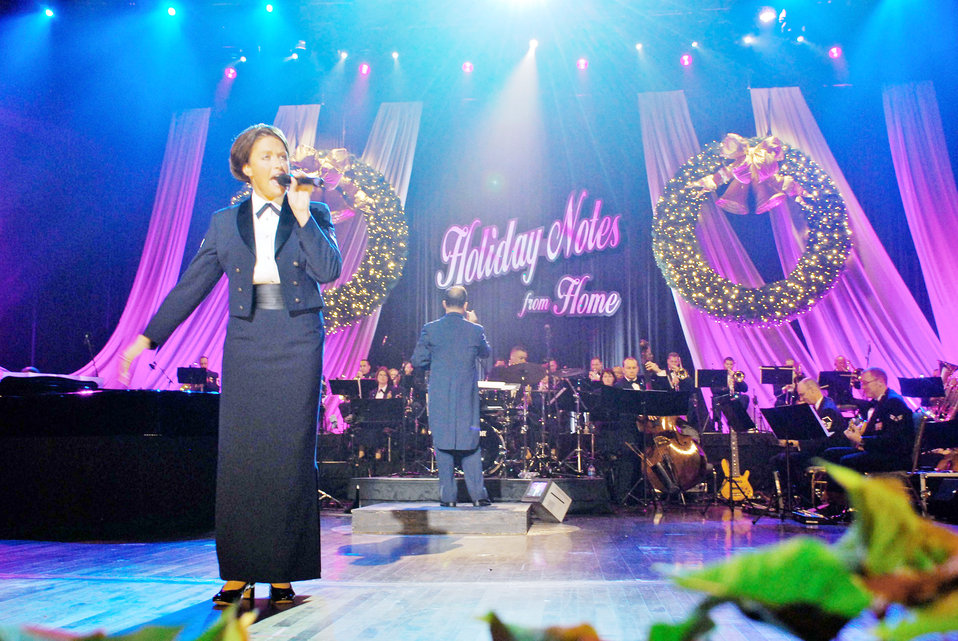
Holiday Notes from Home airs Dec. 23-25

Tech Sgt. Alyson Jones' lifetime dream to sing on the Grand Ole Opry's stage came true as she sang holiday favorites during this year's Holiday Notes from Home holiday concert in Nashville, Tenn. The annual concert was taped Oct. 26, 2009, and will broadcast on Gospel Music Channel and American Forces Network. Amy Grant, Brian McKnight and Take 6 along with the Band of the Air Force Reserve and Air Force Strings participated in the show, paying tribute to military men and women serving around the world. Sergeant Jones is a Band of the Air Force Reserve vocalist.